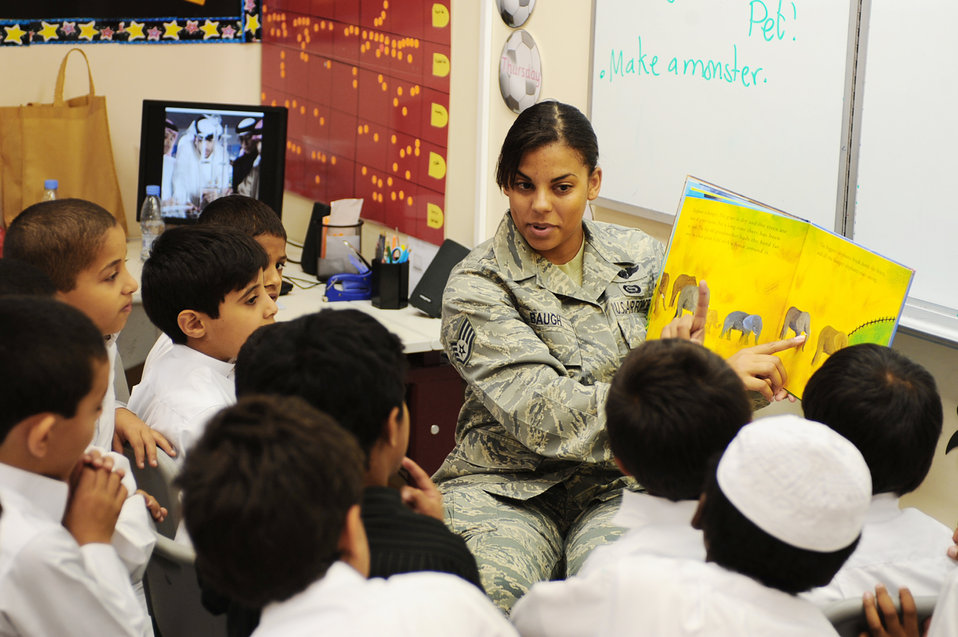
Airmen form Goodwill Amassador Team in Southwest Asia

Staff Sgt. Shala Baugh asks second-graders questions about a story during